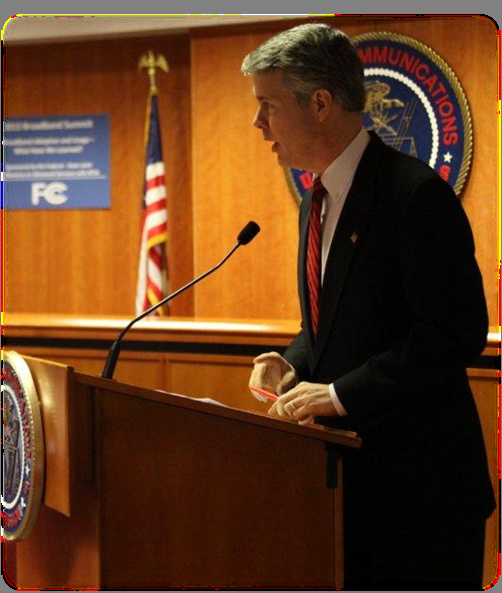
Commissioner Robert McDowell